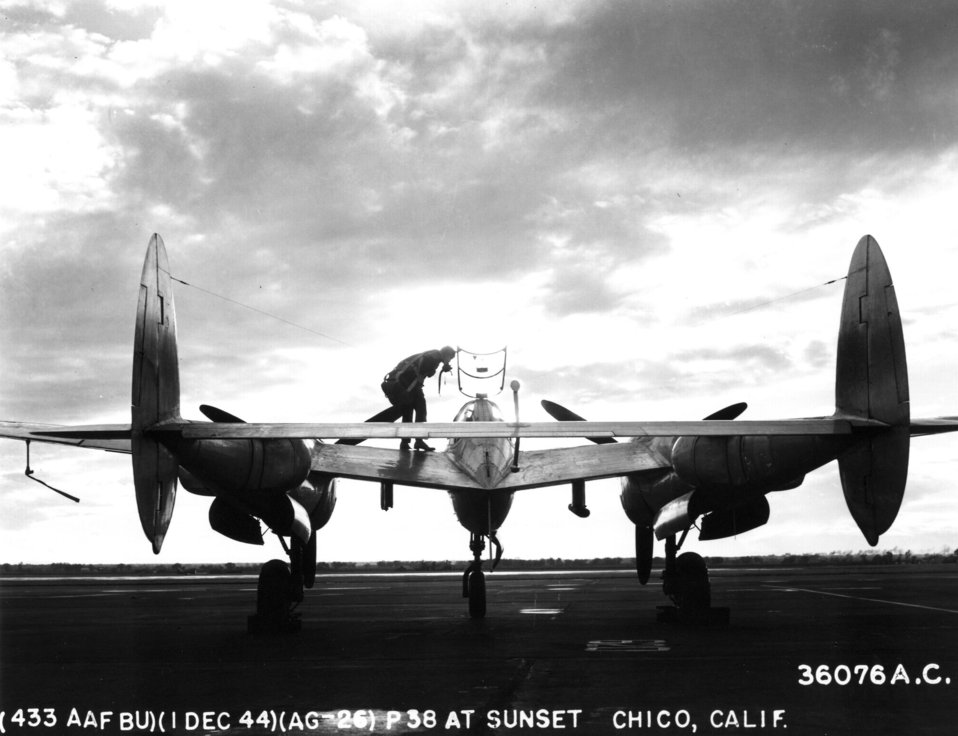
P-38

1940's -- P-38 at sunset